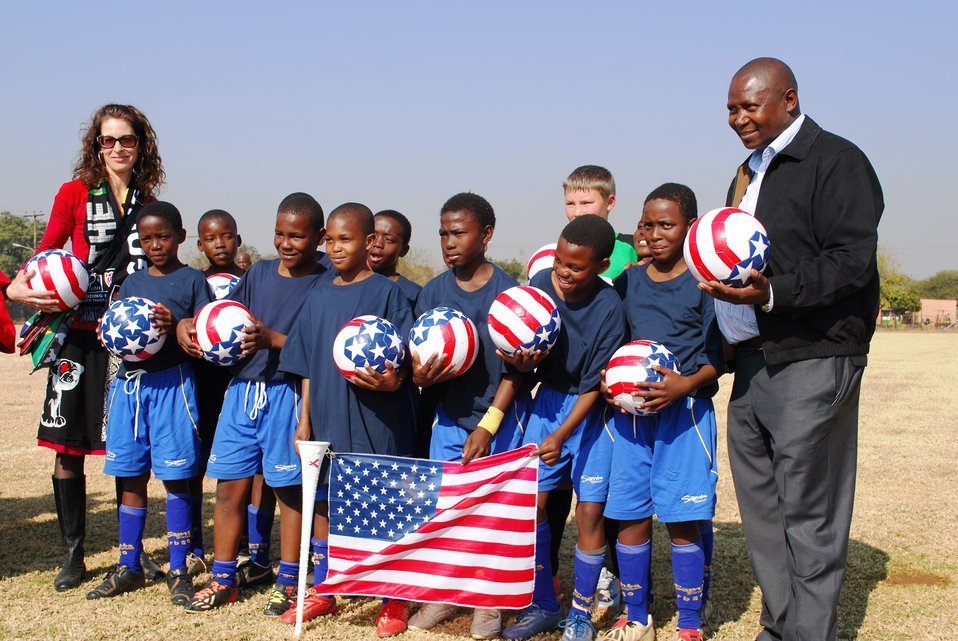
U-11 Bafokeng Football Academy Teams Playing for the U.S. Poses for a Photo With Press Attache Hudson-Dean

The Under-11 Bafokeng Football Academy Team playing as the 'U.S.' pose for a photo with U.S. Embassy Pretoria's Press Attache Sharon Hudson-Dean on June 25, 2010, in Rustenburg, South Africa. Two Under-11 Bafokeng Football Academy teams previewed the FIFA 2010 World Cup match between the United States and Ghana by playing each other as the “U.S.” and Ghana. The game highlighted the development of rural soccer in South Africa, particularly in the Royal Bafokeng Nation, which consists of twenty-nine villages located in the Rustenburg Valley in the North West Province.